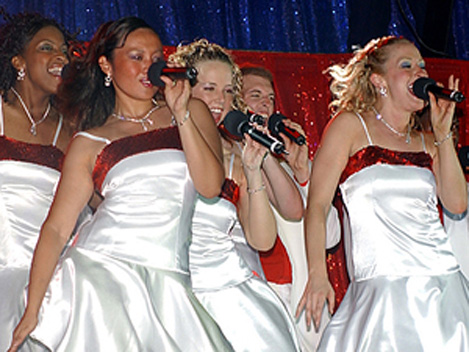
Tops in Blue

SAN ANTONIO -- A group of the 2005 Tops In Blue performers rehearse for the upcoming tour.